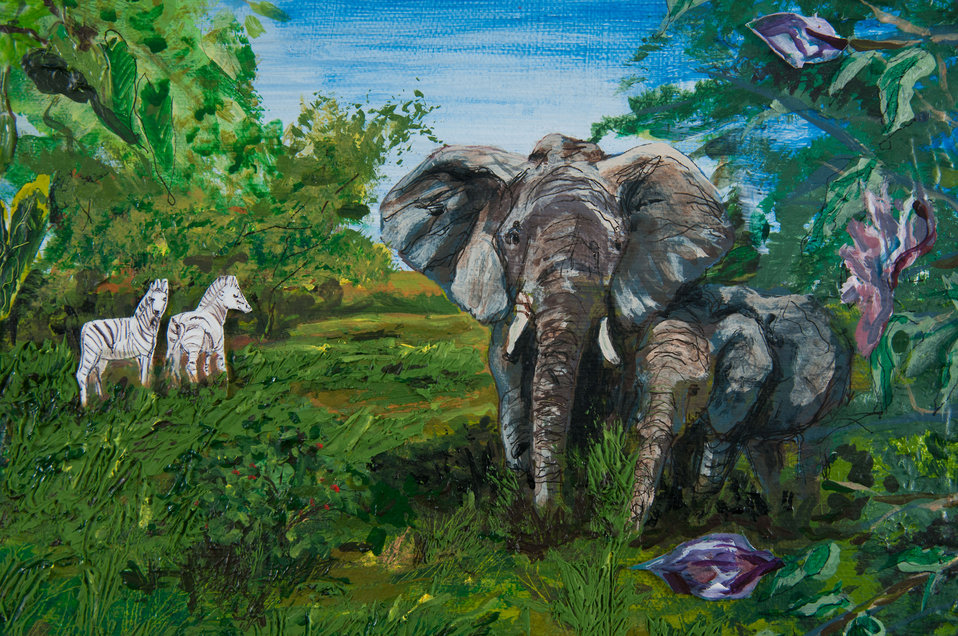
Online Viewer's Choice entries of the 2013 Art & Agriculture, Tuesday, July 9, 2013, in the South Building, Washington, D.C. Themes were expressed by employees from across the department and the contest was open to full-time and part-time USDA employees. Winning artwork will be displayed till the end of the year. U.S. Artistic expression is a creative outlet that is vital for an individual to grow and develop.